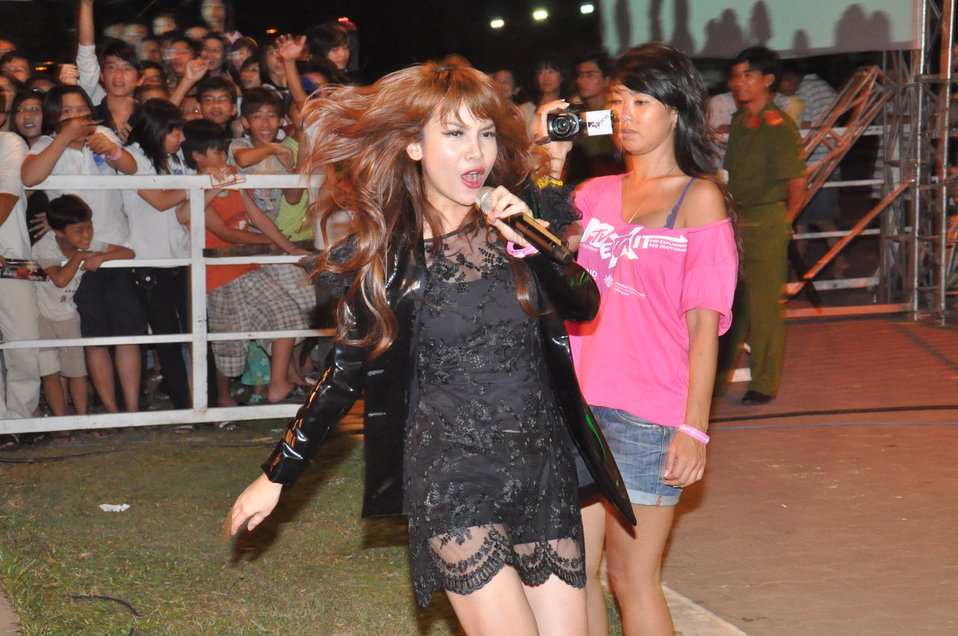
USAID and MTVEXIT concert in Can Tho

Concert in Can Tho against human trafficking, April 10, 2010